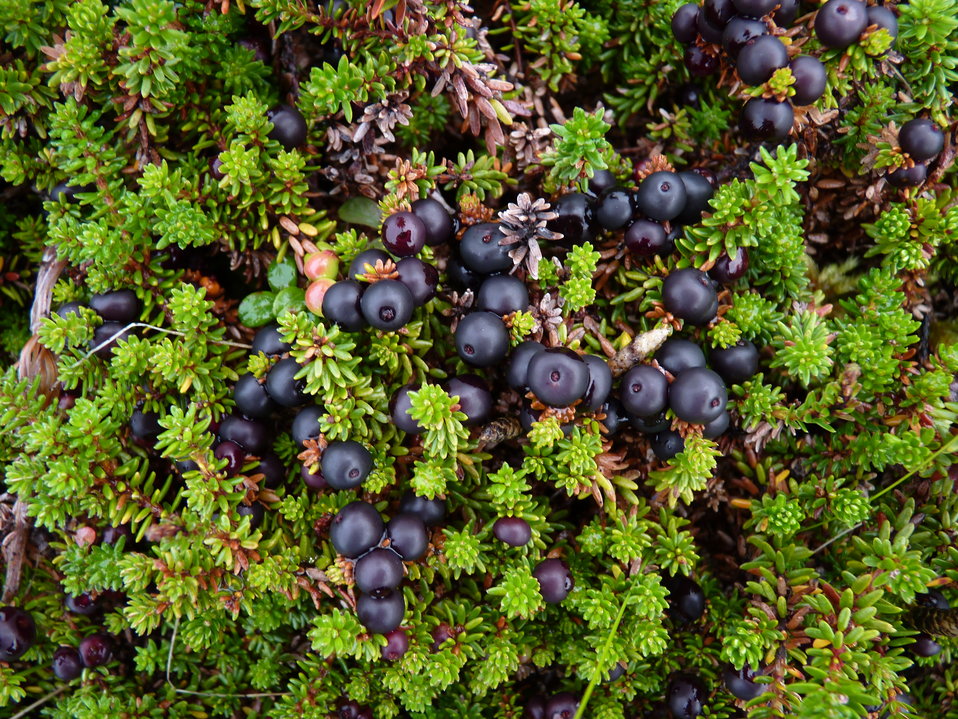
Crowberry

Izembek National Wildlife Refuge